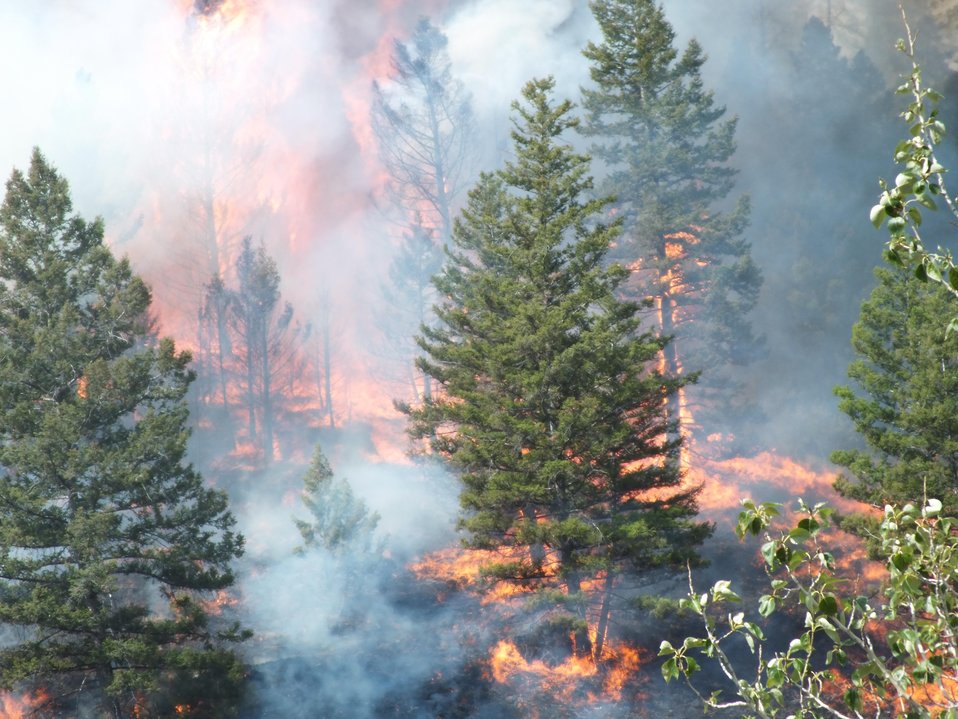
The Lodgepole Fire in the Salmon-Challis National Forest near Challis, ID began on Jul. 20, 2013 by lightning has consumed approximately 20,325 acres and is approximately 40% contained.